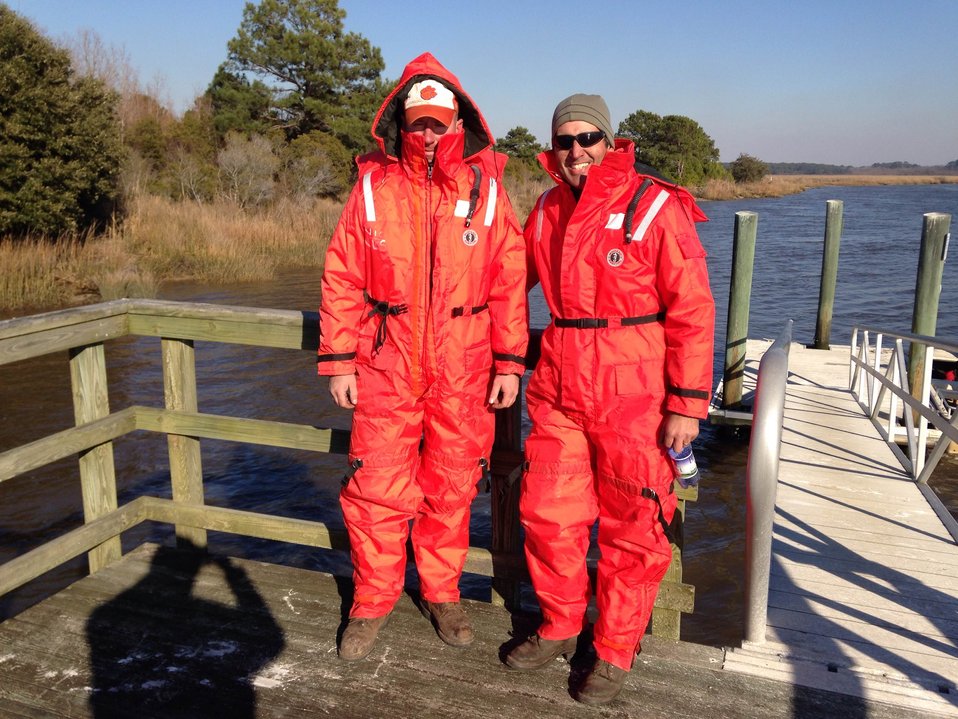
Ace Basin - Bert Rob 012214

USFWS firefighters Bert Wyatt and Rob Wood bundled up after a prescribed fire in January at Ace Basin NWR in South Carolina.